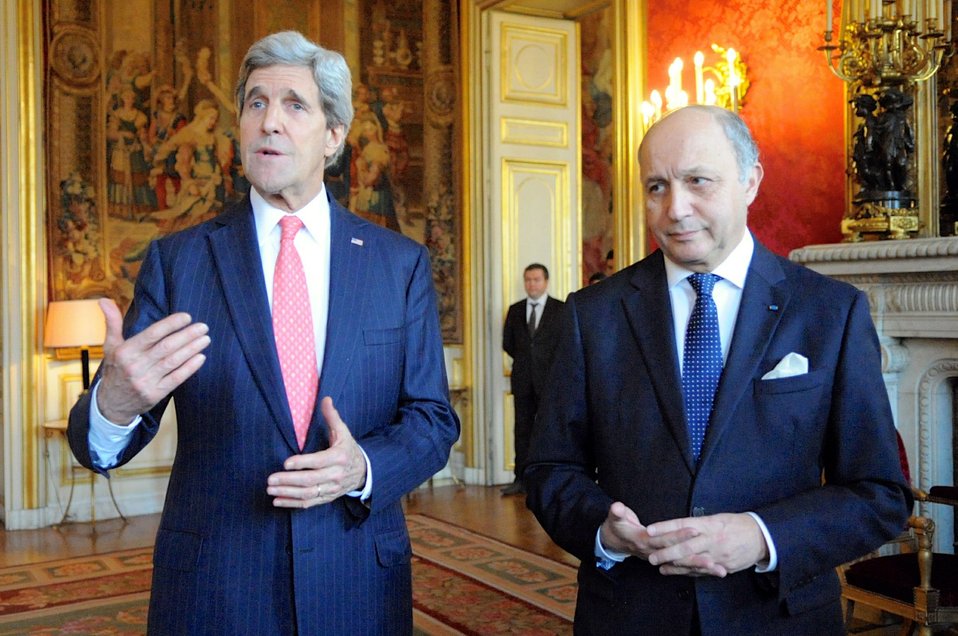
Secretary Kerry, French Foreign Minister Fabius Speak About Ukraine in Paris

U.S. Secretary of State John Kerry, joined by French Foreign Minister Laurent Fabius, speaks to reporters about the situation in Ukraine before a bilateral meeting at the Quai d'Orsay in Paris, France, on February 19, 2014.